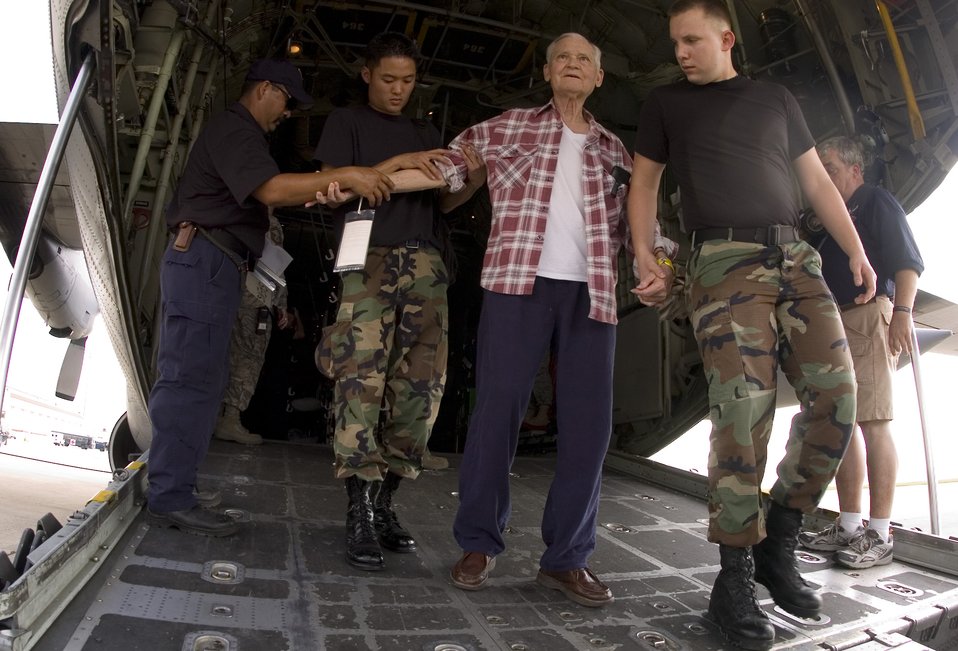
Hurricane Relief

Airman Dury Kim (left) and Airman First Class Matthew Garcia (right) escort an elderly man off the ramp of a C-130 Hercules at the former Kelly Air Force Base, Texas, Aug. 30 after being evacuated from Beaumont, Texas. The Texas Air National Guard C-130 brought 23 evacuees from Beaumont to San Antonio before Hurricane Gustav reached the Gulf Coast. Airman Kim is a dental assistant at the 59th Dental Training Squadron and Airman Garcia is a dental lab technician at the 59th Dental Support Squadron.